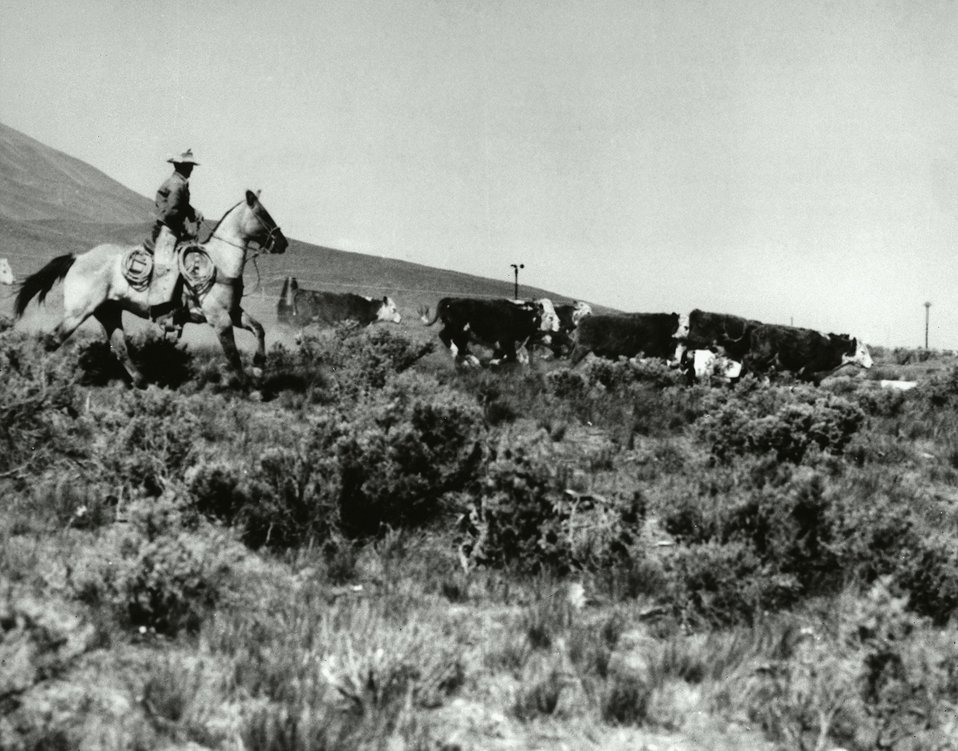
The 120-square mile Arid Lands Ecology Reserve on the Atomic Energy Commission's Hanford Project. c. 1972